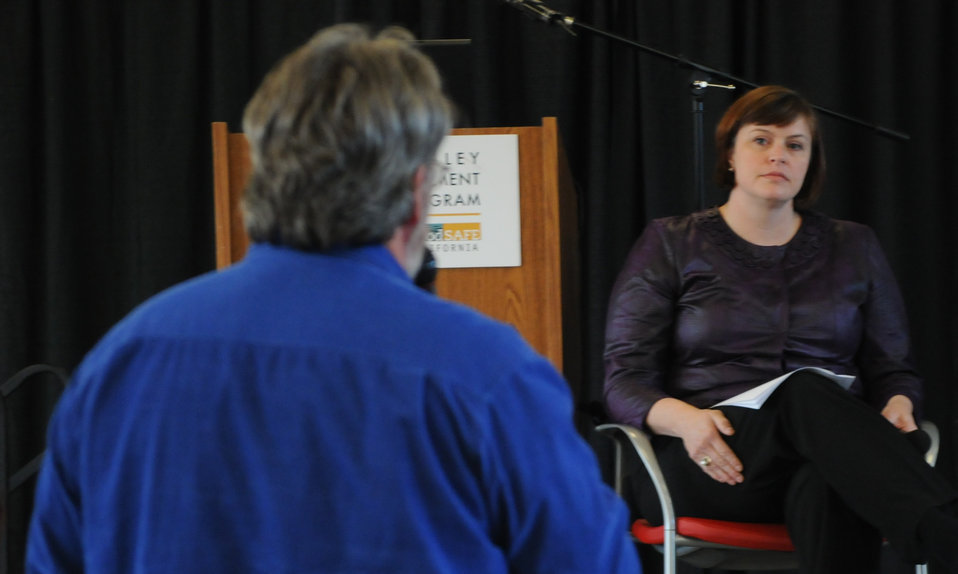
WEST SACRAMENTO, Calif. (Dec. 9, 2010) – U.S. Army Corps of Engineers Sacramento District’s Alicia Kirchner addresses questions about the Corps’ Central Valley Integrated Flood Management Study at the California Department of Water Resources’ Valleywide Forum here Dec. 9, a public meeting to detail progress on California’s Central Valley Flood Protection Plan. Both California’s and the Corps’ plans aim to develop a sustainable flood risk reduction system in California’s Central Valley.